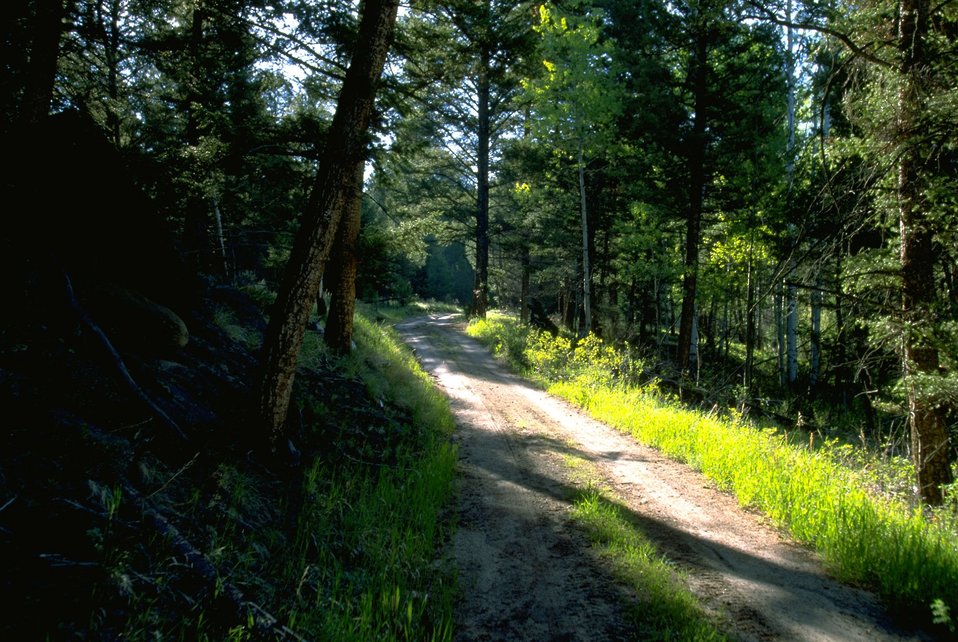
MacLean Road among the trees in the Humbug Spires Wilderness Study Area